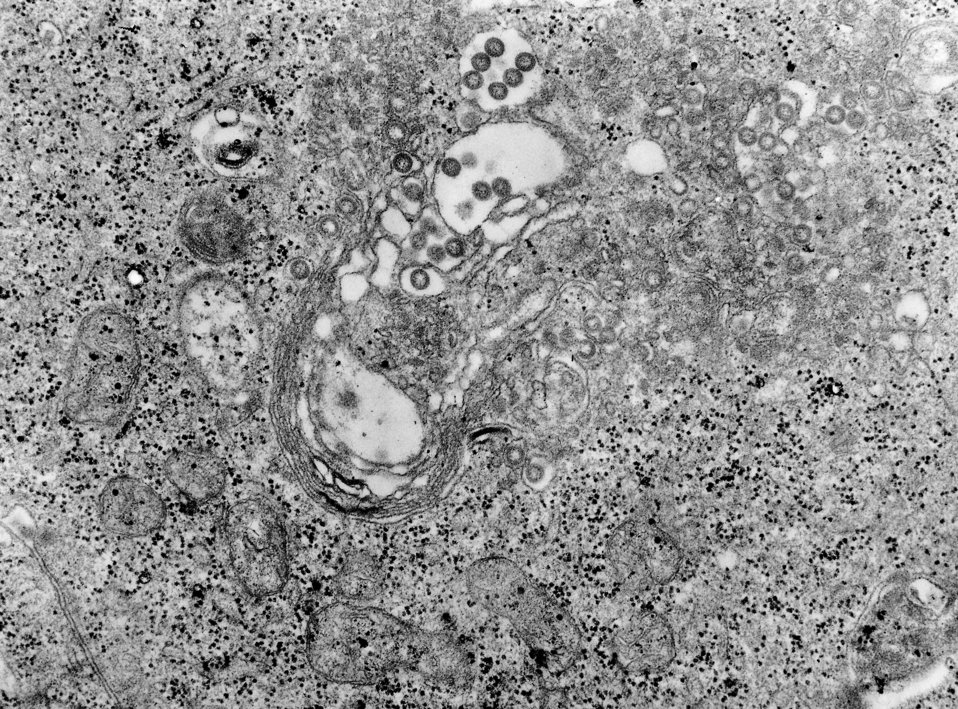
This transmission electron micrograph (TEM) depicted a highly magnified view of a tissue that had been infected with Rift Valley fever (RVF) virus. RVF virus is a member of the genus Phlebovirus in the family Bunyaviridae and was first reported in livestock in Kenya around 1900. It is found to be an acute, fever-causing viral disease that affects domestic animals (such as cattle, buffalo, sheep, goats, and camels) and humans. RVF is most commonly associated with mosquito-borne epidemics during years of unusually heavy rainfall.